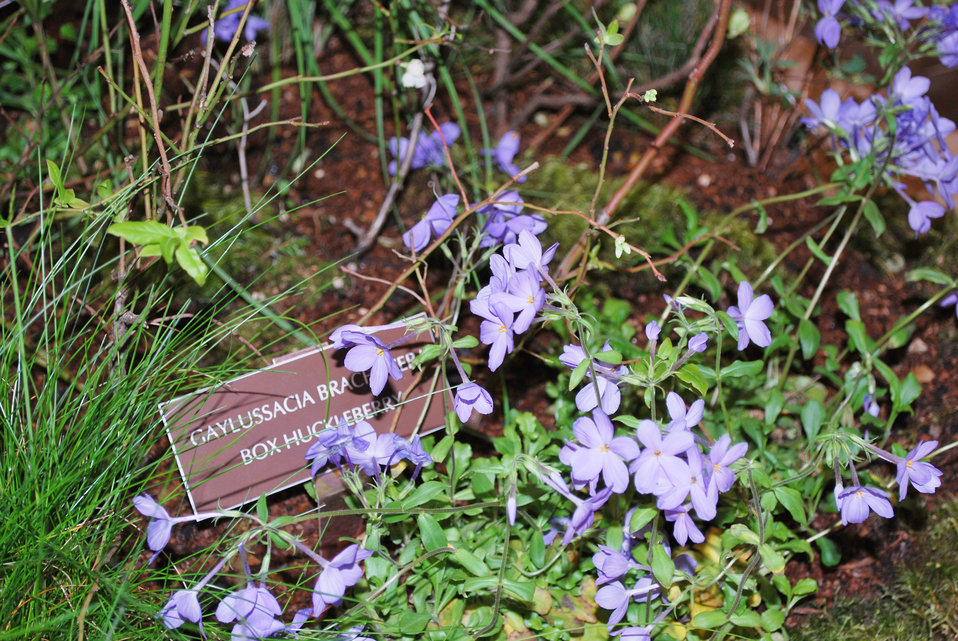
EPA's display at the Philadelphia Flower Show, 2014

Plants native to the mid-Atlantic region in our exhibit at the 2014 Philadelphia Flower Show: box huckleberry (Gaylussacia brachycera) and creeping phlox (Phlox stolonifera).